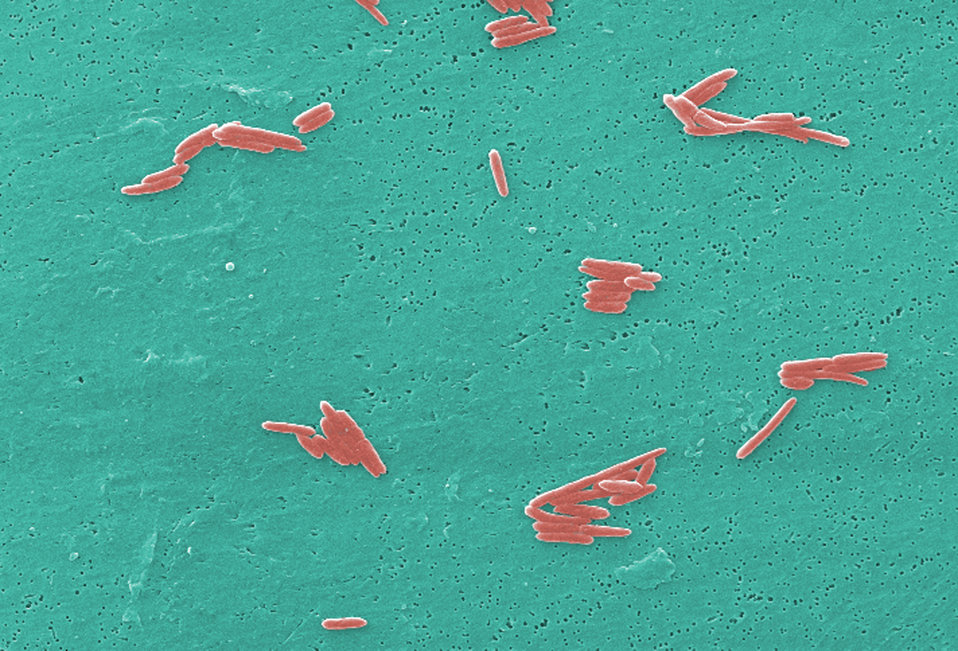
This digitally-colorized scanning electron micrograph (SEM) depicted numbers of Gram-negative Sebaldella termitidis bacteria.